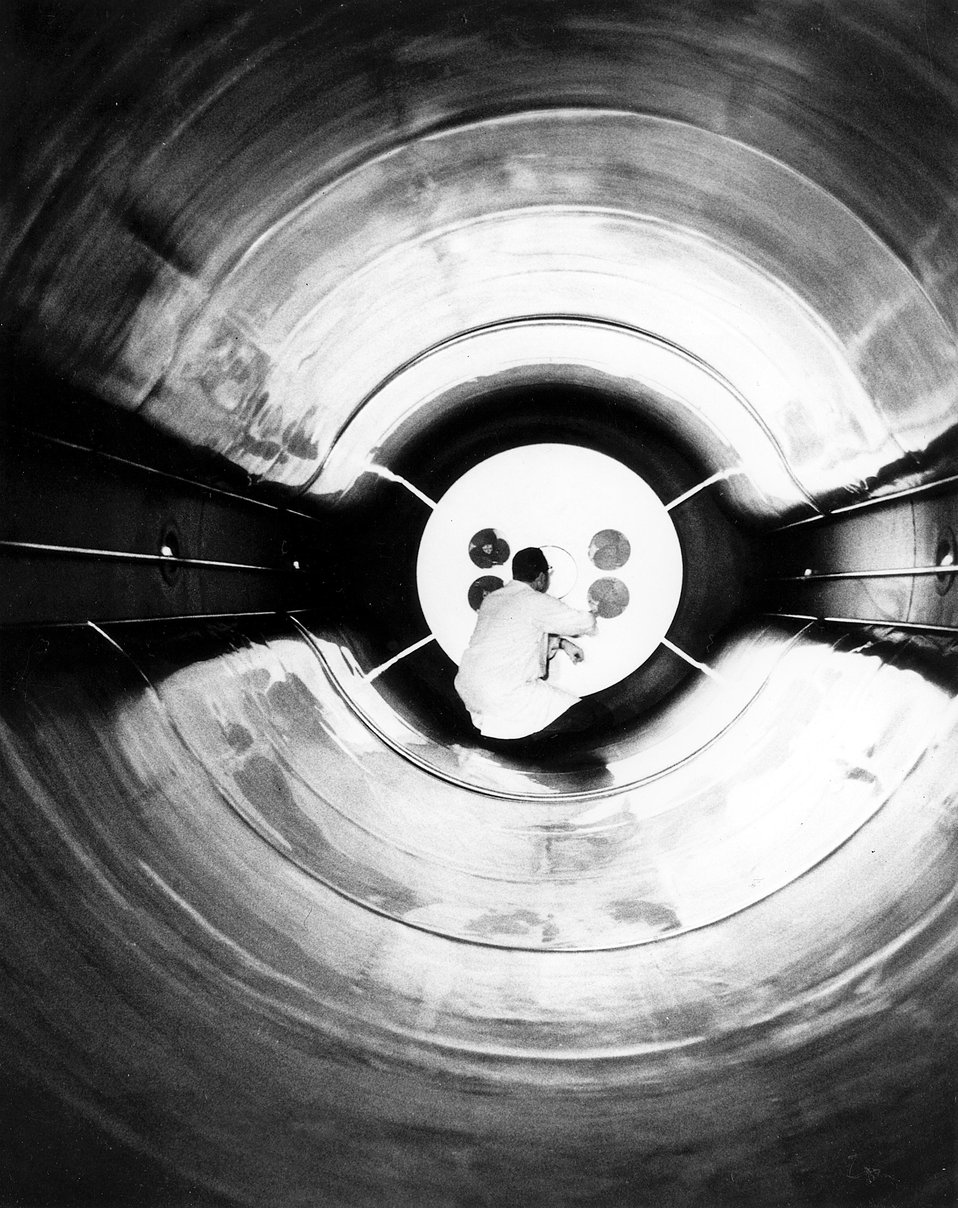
The interior of the tank which surrounds Argonne's 4 MV high-current dynamitron during operation.
C.1970